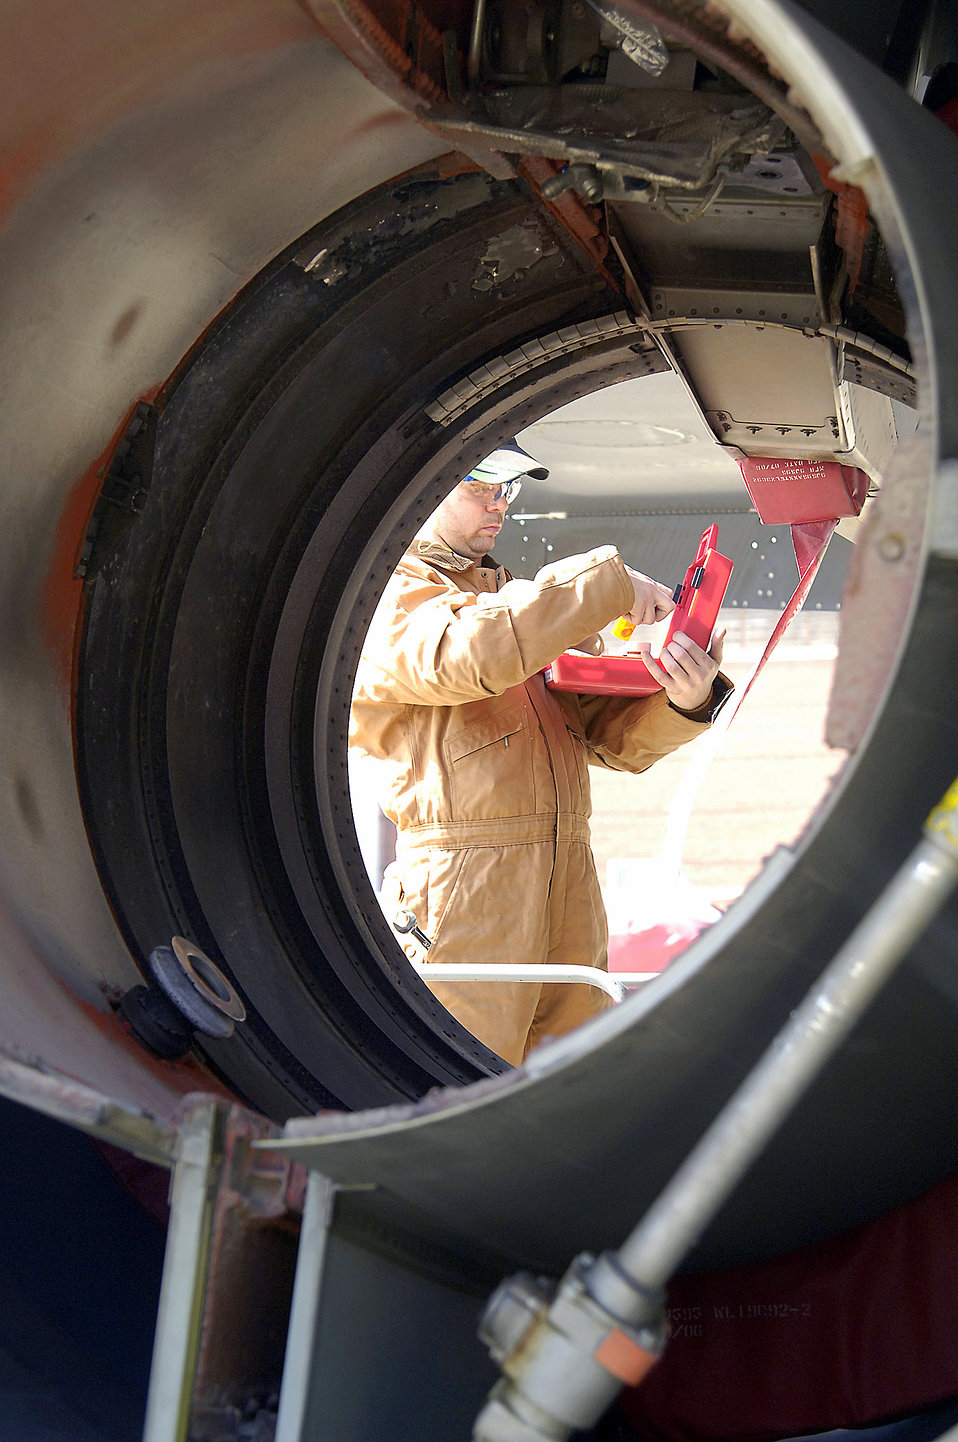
No margin for error at Tinker bomber egress shop

Robert Culpepper removes miniature explosive devices from a KC-135 Stratotanker's No. 3 strut before the aircraft is moved into a hangar for depot work March 2 at Tinker Air Force Base, Okla. The aircraft has 10 of these devices that during an engine fire would instigate releasing fire retardant.